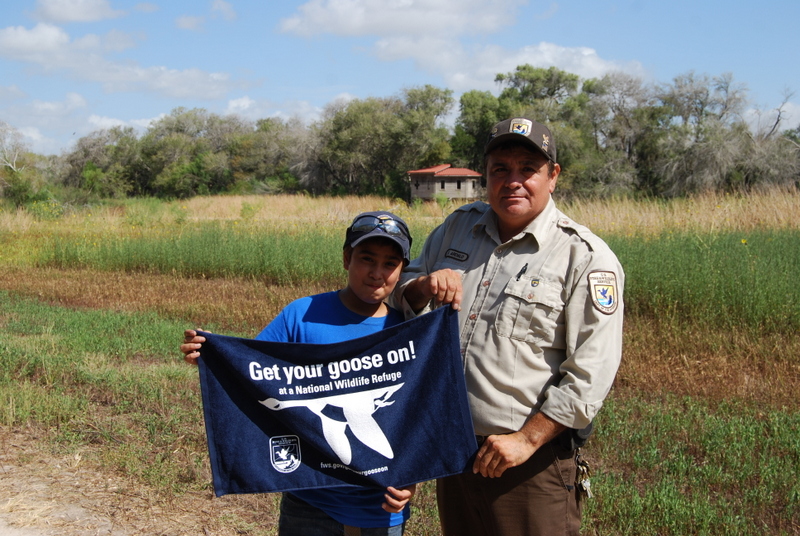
Get Your Goose On!

Photo taken on Willow Lakes Trail at Santa Ana National Wildlife Refuge in southern Texas.